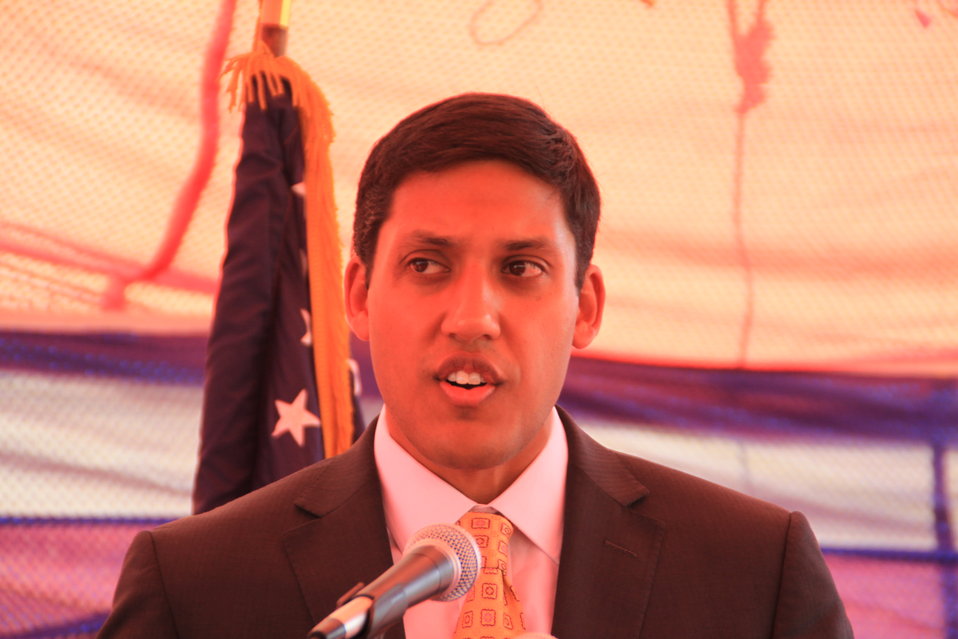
Badam Bagh Farm